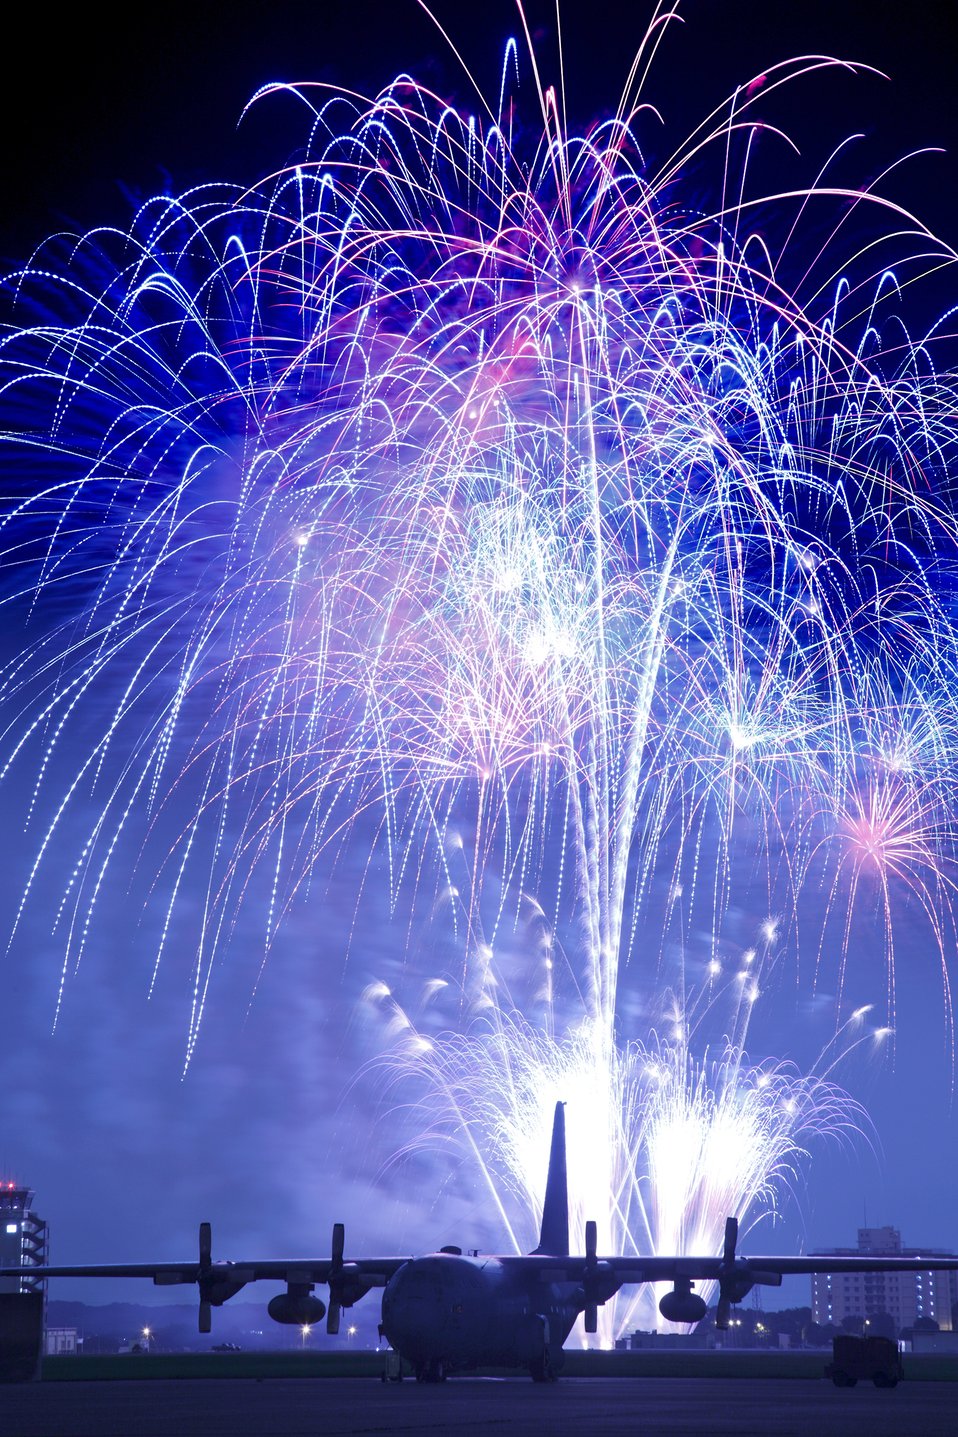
Fireworks Celebration

Fireworks burst over Yokota Air Base, Japan, July 3, 2010. The day kicked off with the Firecracker 5K run and continued with a wide variety of activities throughout the day provided by Airmen with the 374th Force Support Squadron.